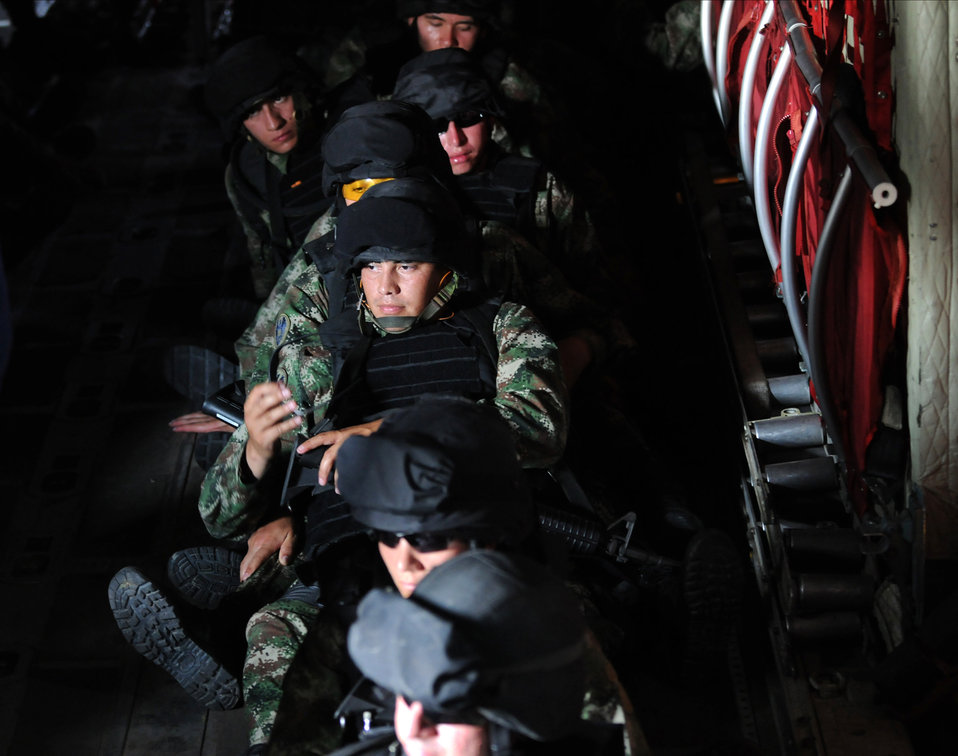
Rescue Airmen exchange knowledge, build partnerships with Colombian airmen

Members of the Colombian military sit in the back of a C-130 Hercules prior to a training exercise with Colombian C-130 aircrews Sept. 16, 2010, at at Palanquero Air Base, Colombia. During a weeklong information exchange, four Airmen from Moody Air Force Base observed and advised the Colombians on their day-to-day rescue operations such as personnel air drops, cargo drops, infiltration, and exfiltration of military and civilian personnel.